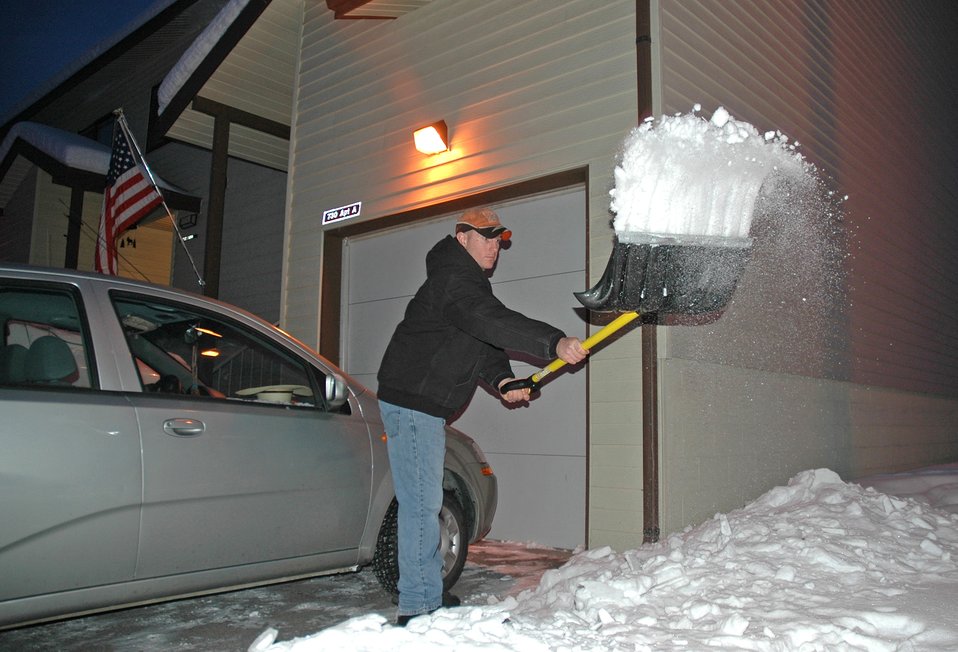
Core values make impossible happen

Staff Sgt. Phillip Bridges shovels the driveway of his new home Jan. 17. Thanks to a total basewide effort at Eielson Air Force Base, Alaska, Sergeant Phillips' family was one of 241 successfully relocated from the on-base Sprucewood Homes development to viable on- and off-base residences before the harsh Alaska winter rolled in. Sergeant Bridges is assigned to the 354th Logistics Readiness Squadron.